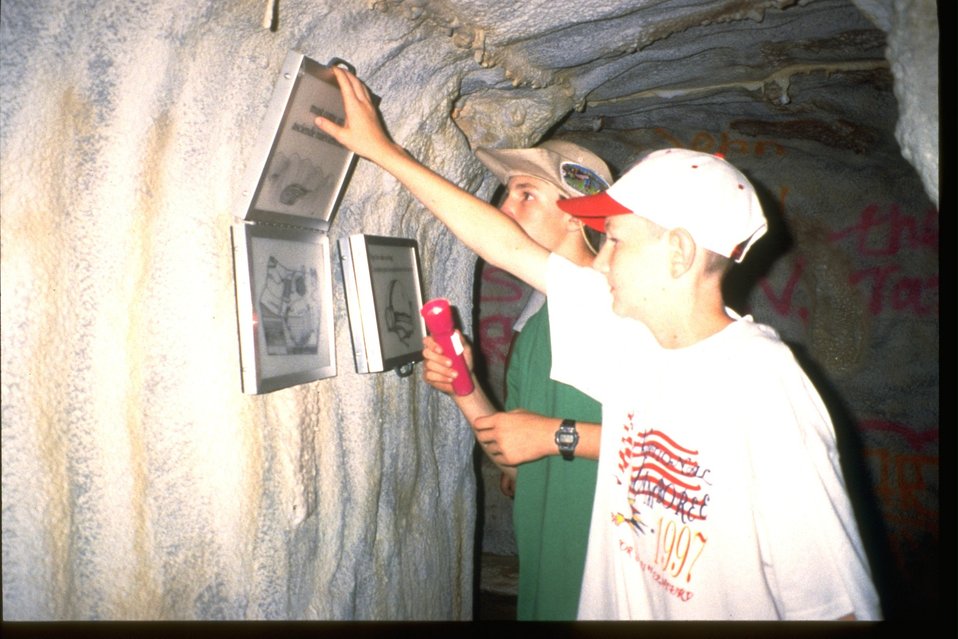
Boy Scouts National Jamboree: BLM caves exhibit.